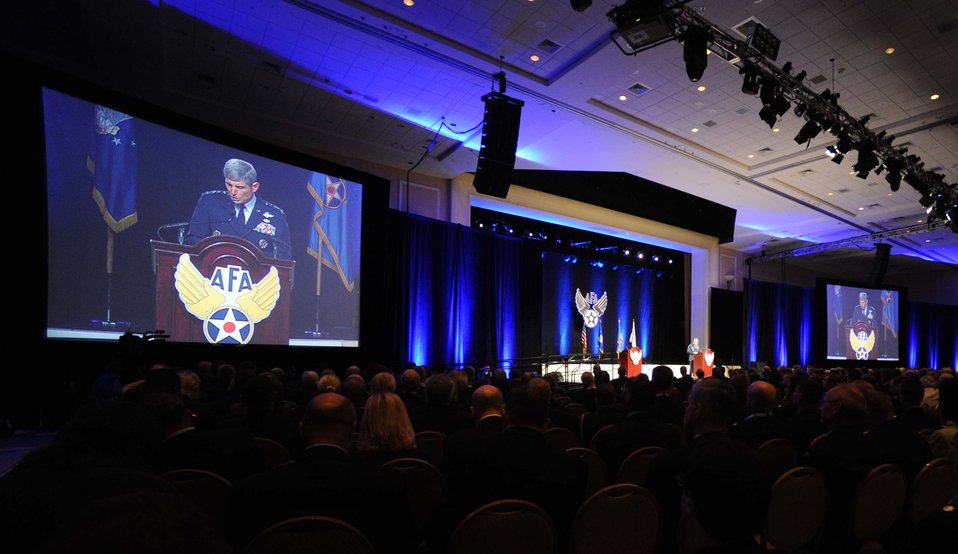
Air Force will preserve ‘core contributions’ despite pressures, CSAF says

Air Force Chief of Staff Gen. Norton Schwartz speaks to attendees Sept. 20, 2011, at the Air Force Association's 2011 Air & Space Conference and Technology Exposition at National Harbor, Md. Schwartz said Air Force leaders are focused on managing potential budget constraints so the service can continue to provide its unique contributions to national security.